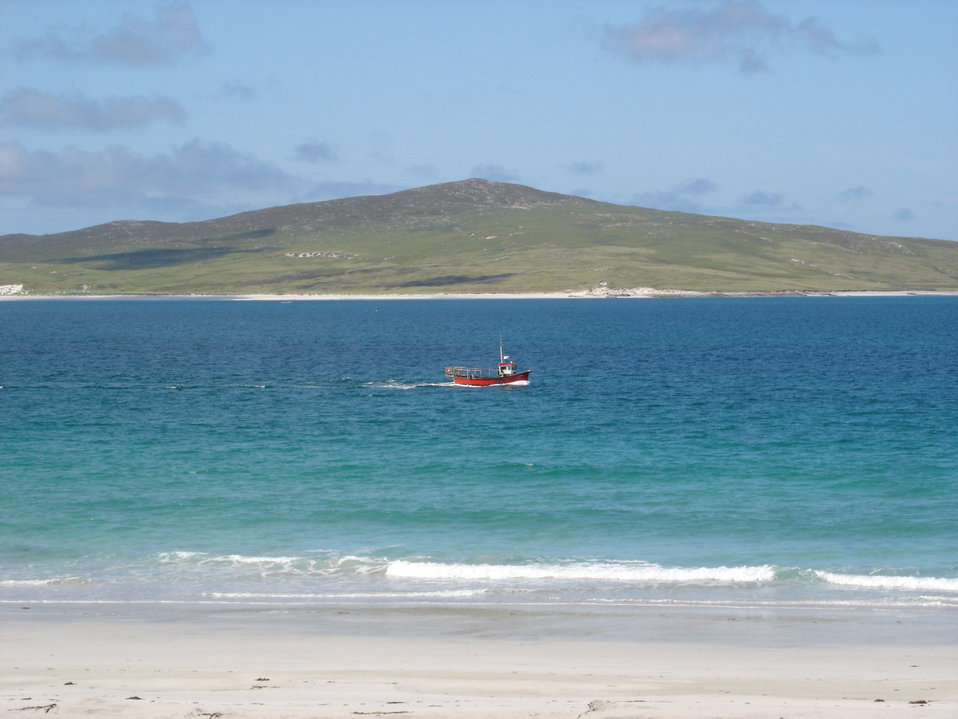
A Berneray fishing boat passes the west beach. In the centre distance is Pabbay, an unpopulated island in the Sound of Harris.